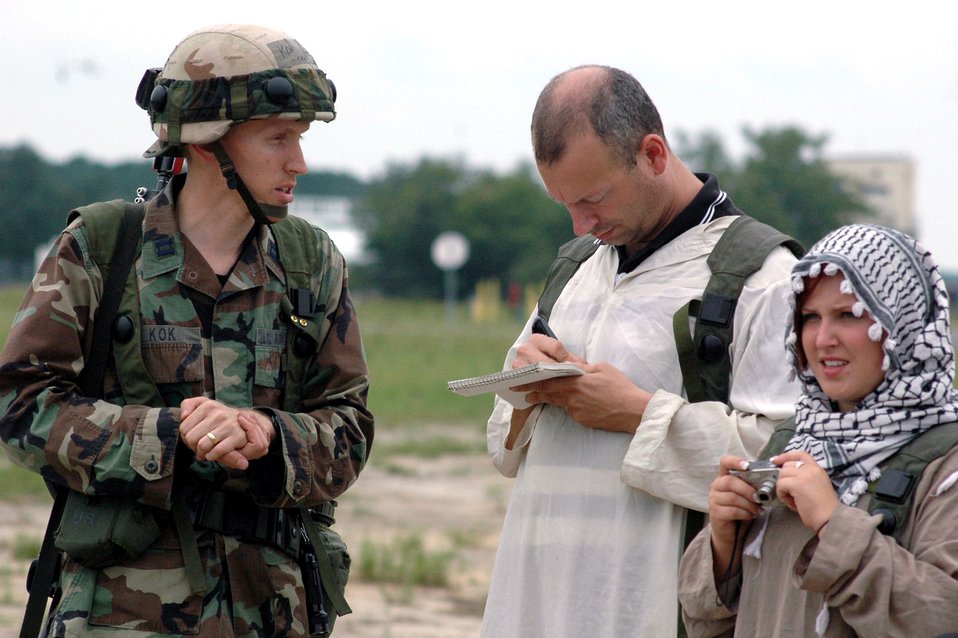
Eagle Flag tests combat support skills

Capt. Andre Kok talks with